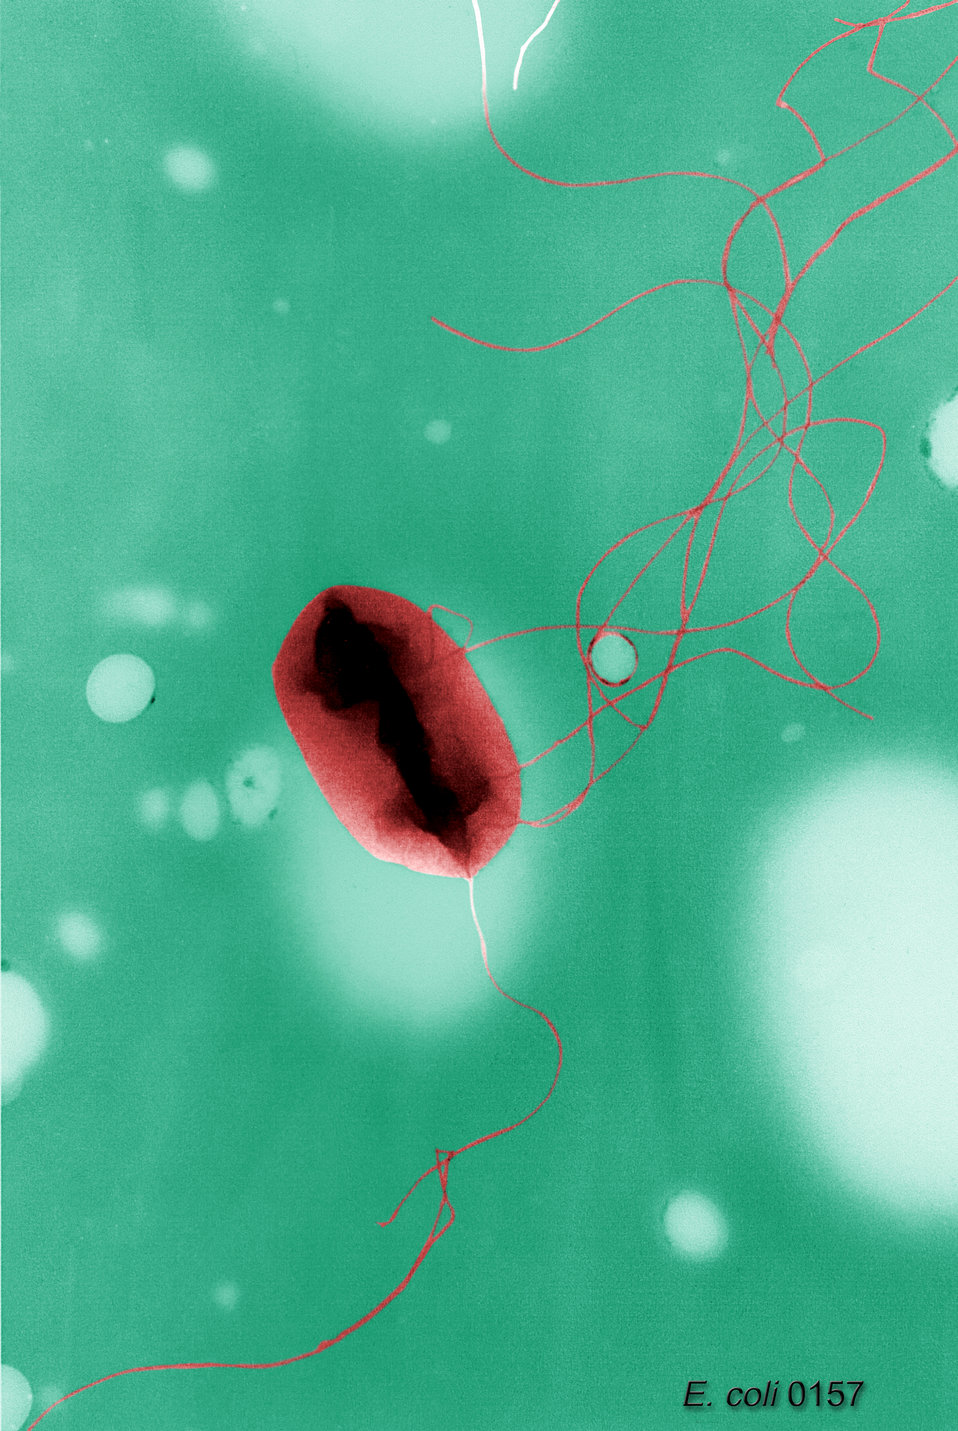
This is a colorized transmission electron micrograph of Escherichia coli O157:H7. See PHIL 188 for a black and white version of this image.